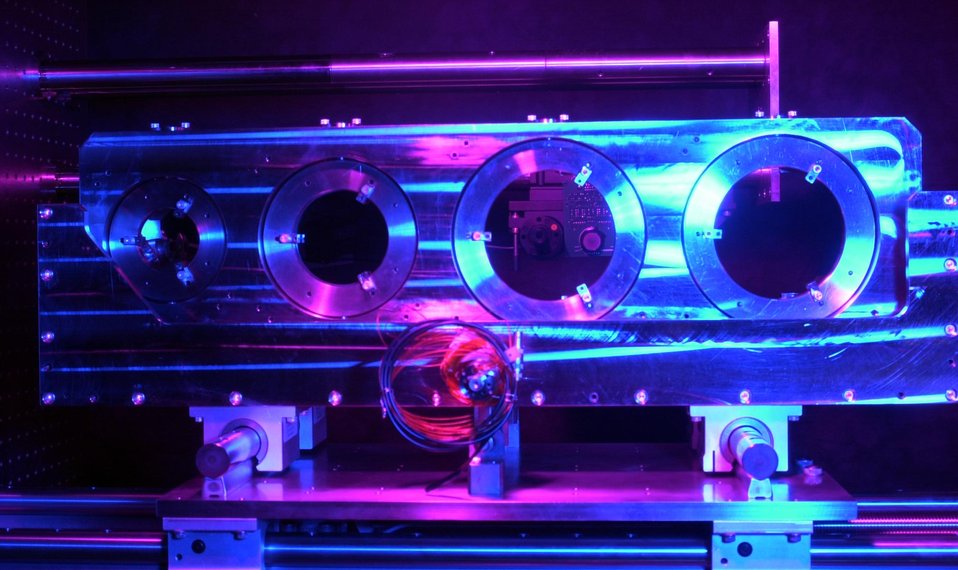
INTERNAL PARTS FOR THE IR UPGRADE FREE ELECTRON LASERS AT THE THOMAS JEFFERSON NATIONAL ACCELERATOR FACILITY.

FREE ELECTRON LASERS (FELS) PROVIDE STRONG BEAMS OF LASER LIGHT THAT CAN BE TUNED TO A PARTICULAR COLOR OR WAVELENGTH. PLANNED USES INCLUDE PROCESSING PLASTICS SYNTHETIC FIBERS, AND OTHER MATERIALS AND COMPONENTS OF ELECTRONICS, MICROTECHNOLOGY AND NANOTECHNOLOGY. CONSUMER PRODUCTS THAT MAY BENEFIT FROM FELS INCLUDED CLOTHING, CARPETING AND BEVERAGE AND FOOD PACKAGING.